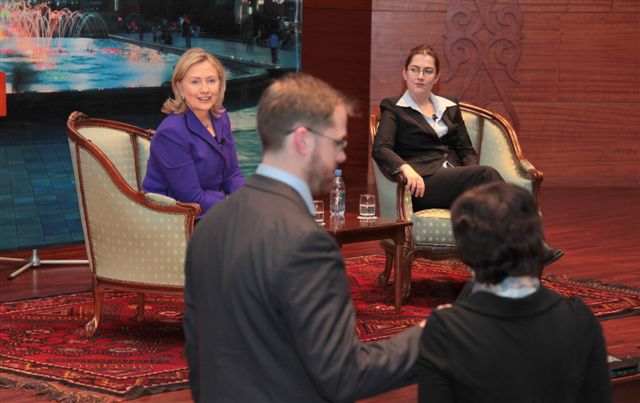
Secretary Clinton Listens to an Audience Member

U.S. Secretary of State Hillary Rodham Clinton listens to a question from an audience member at a town hall on “Empowering Civil Society for Central Asia’s Future” in Astana, Kazakhstan, on November 30, 2010.